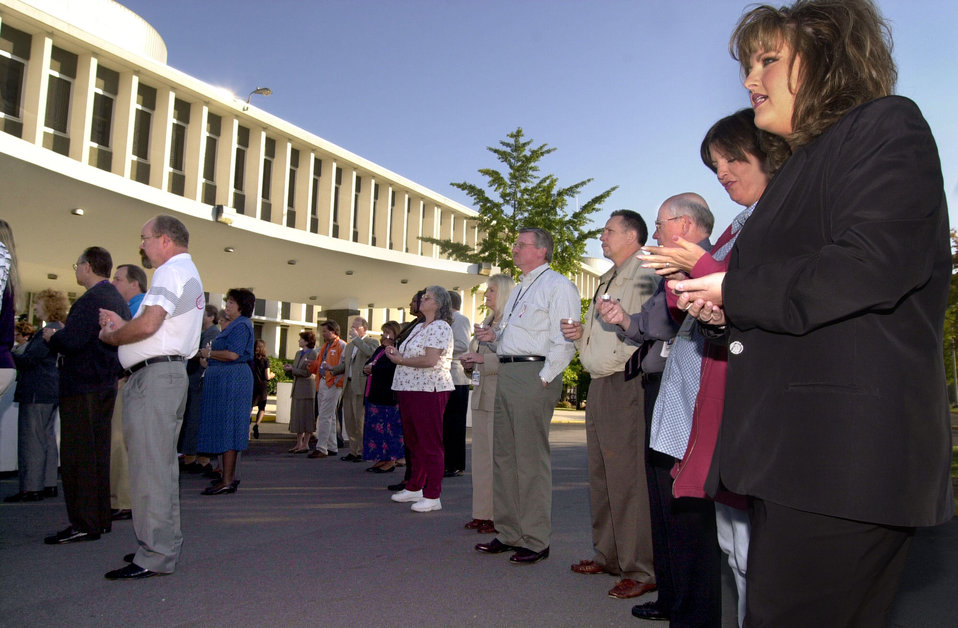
Flag Pole Pray after 911 Federal Building

01-249-2273 DOE photo by Lynn Freeny
Oak Ridge Tennessee 10/2/2001